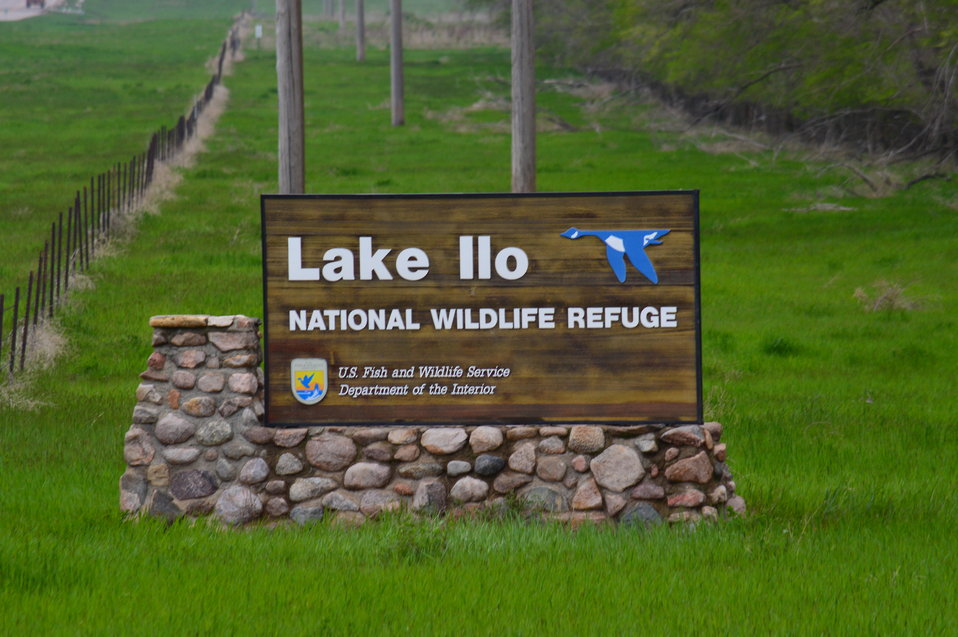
Lake Ilo National Wildlife Refuge sign